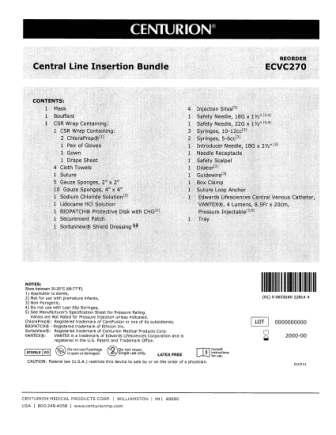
RECALLED - Convenience kits which contain bacteriostatic sodium chloride solution by American Regent

April 1, 2011 - Product Recall - Centurion Medical Products Initiates Voluntary Recall of Customized Convenience Kits (including select Central Venous Catheter, PICC Insertion, and VAD Trays) that contain American Regent’s Bacteriostatic Sodium Chloride Injection, USP, 0.9% 30 mL Multiple Dose Vials.